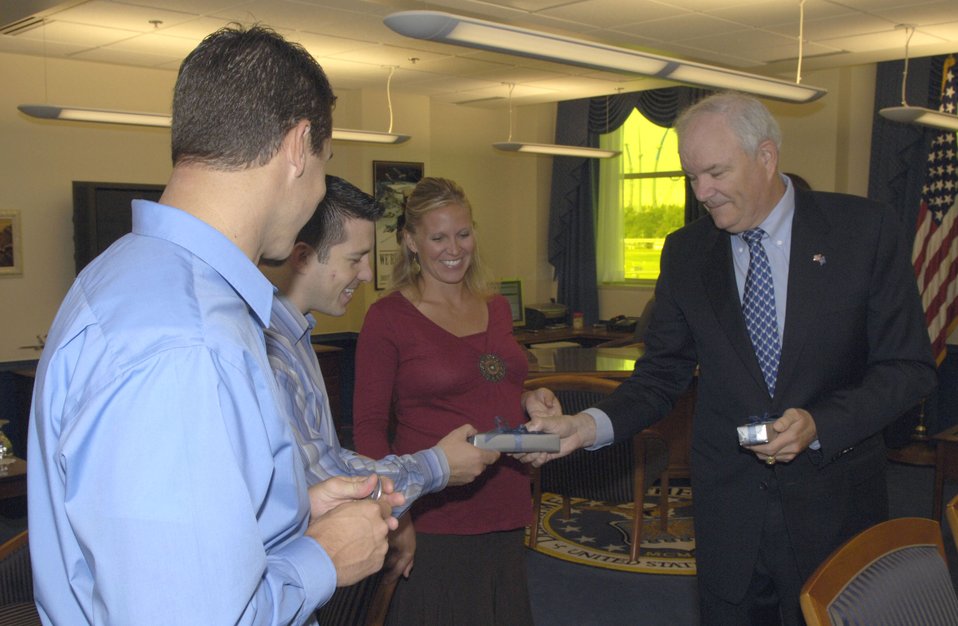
'Treasure Hunters' meet Air Force leaders

Secretary of the Air Force Michael W. Wynne meets Team Air Force from the